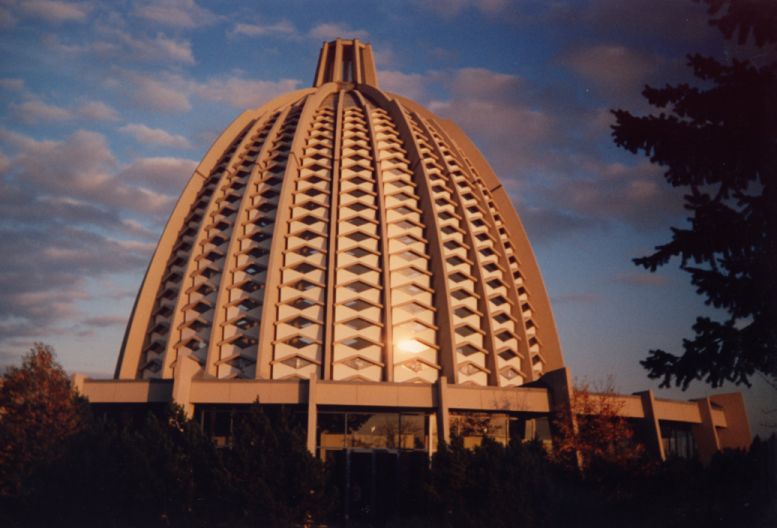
Bahai how frankfurt